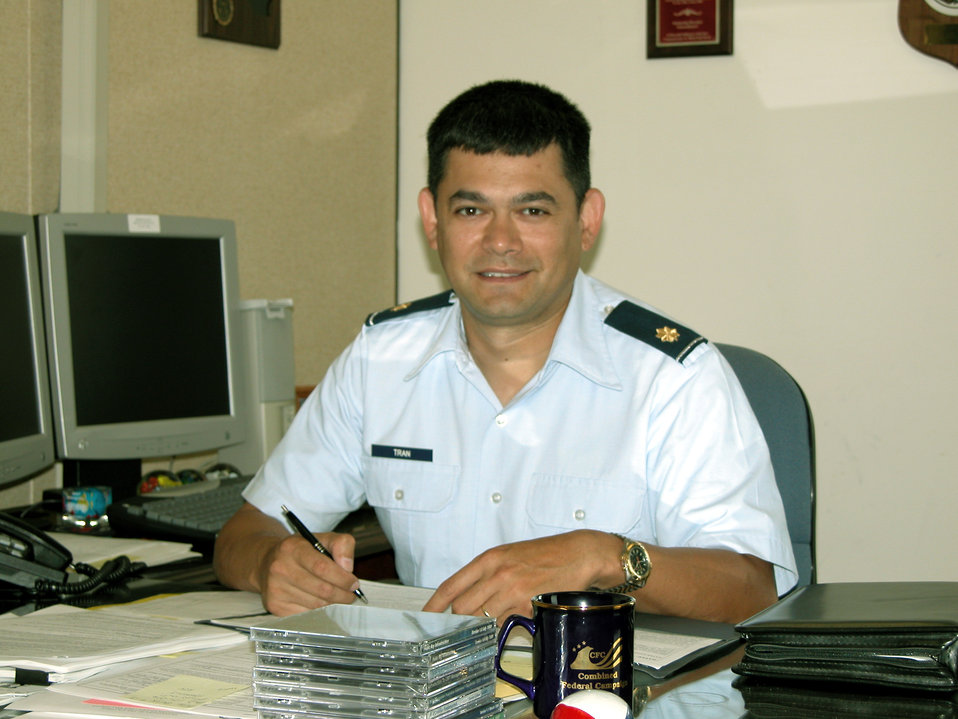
Finding success in AF blue

EGLIN AIR FORCE BASE, Fla. -- Maj. Phuong Tran joined the military after he and his family fled Saigon, Vietnam, to escape communism in 1975. He is now the information system flight commander for the 96th Communications Squadron here.